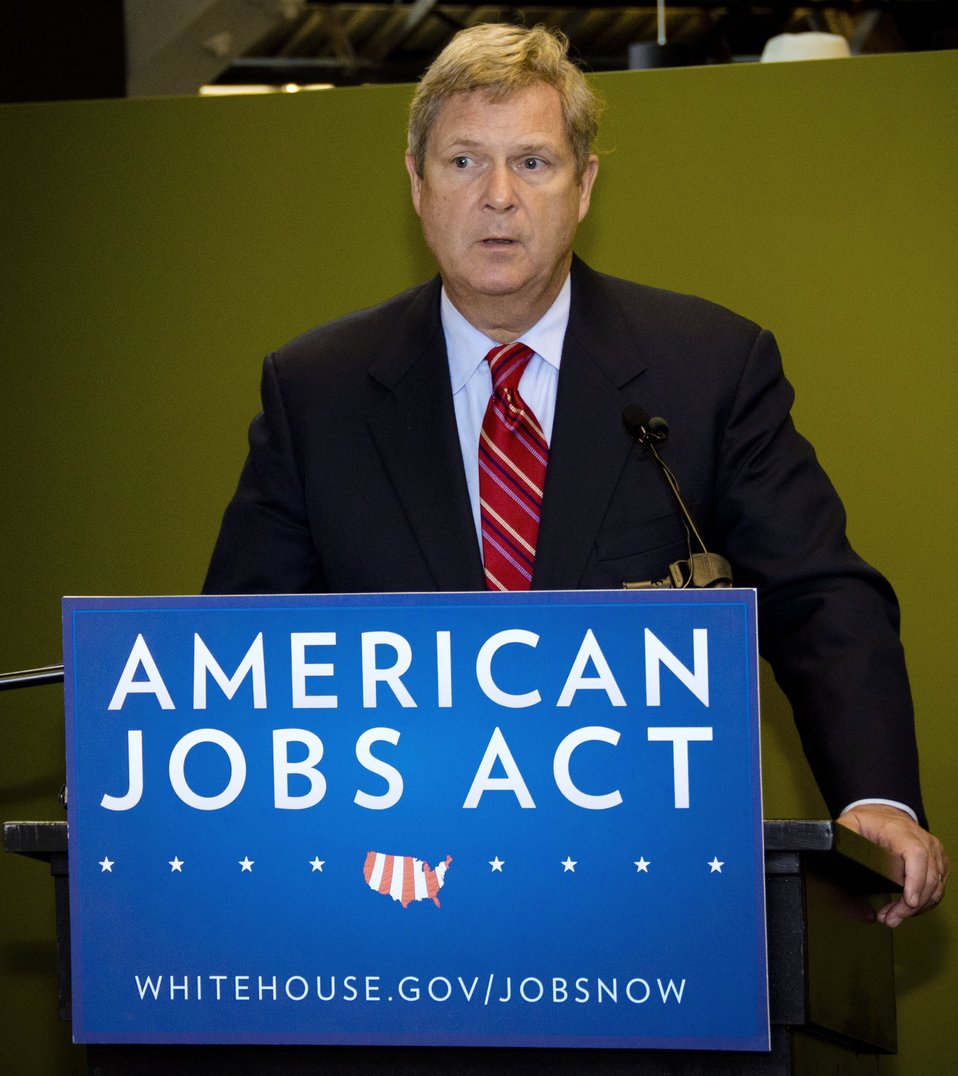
Agriculture Secretary Tom Vilsack of the United States Department of Agriculture explaining the American Jobs Act to a group from the Portland, OR area on Tuesday, September 27, 2011.